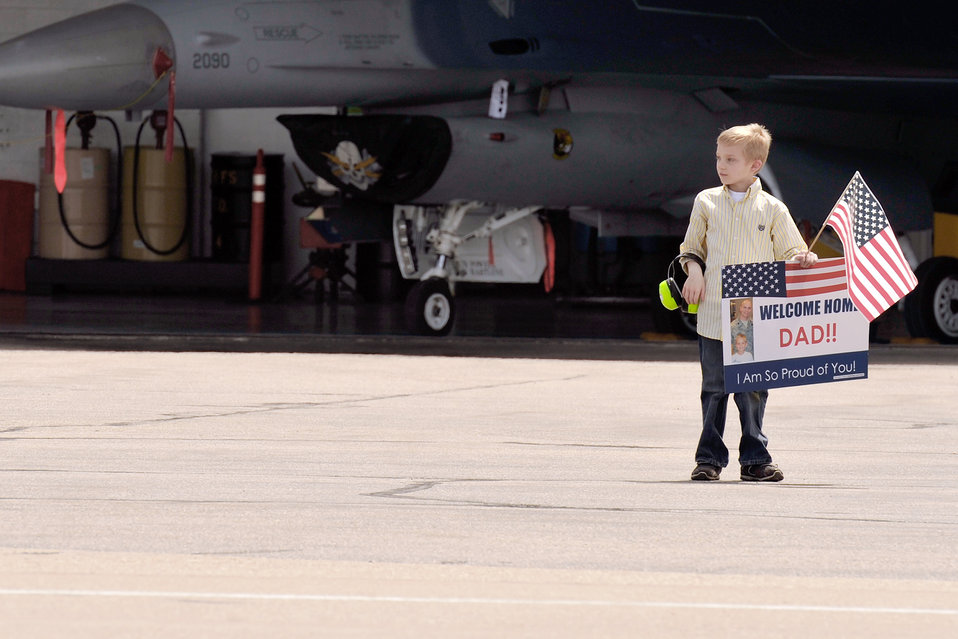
Airmen arrive

A family member awaits the return of his father, a pilot with the 4th Fighter Squadron, April 15, 2011, at Hill Air Force Base, Utah. The arriving Airmen are the first of a team returning from a six-month deployment to Bagram Air Base, Afghanistan.